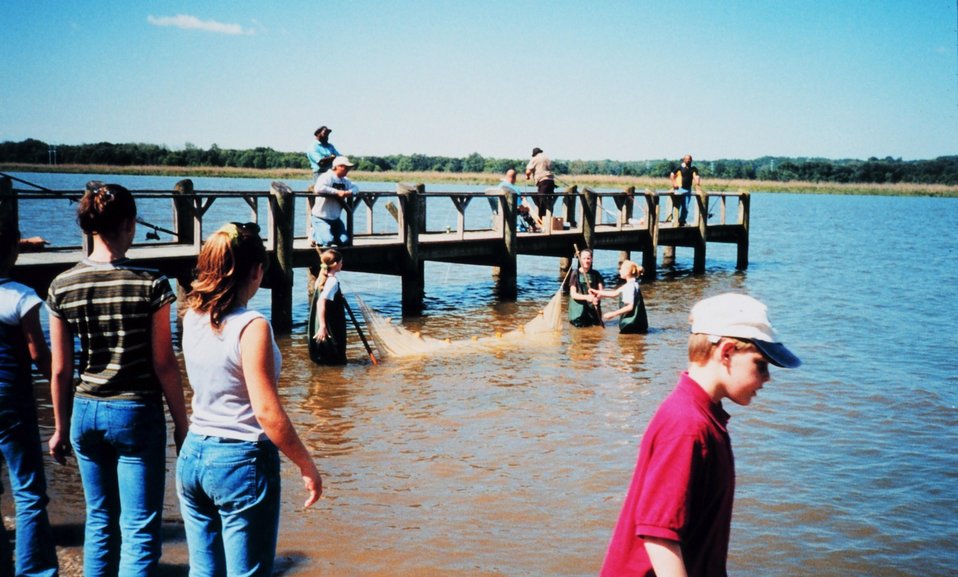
A middle school field trip to Kings Landing. Dragging seine net to determine kinds and variety of organisms present in the river at this time of year.